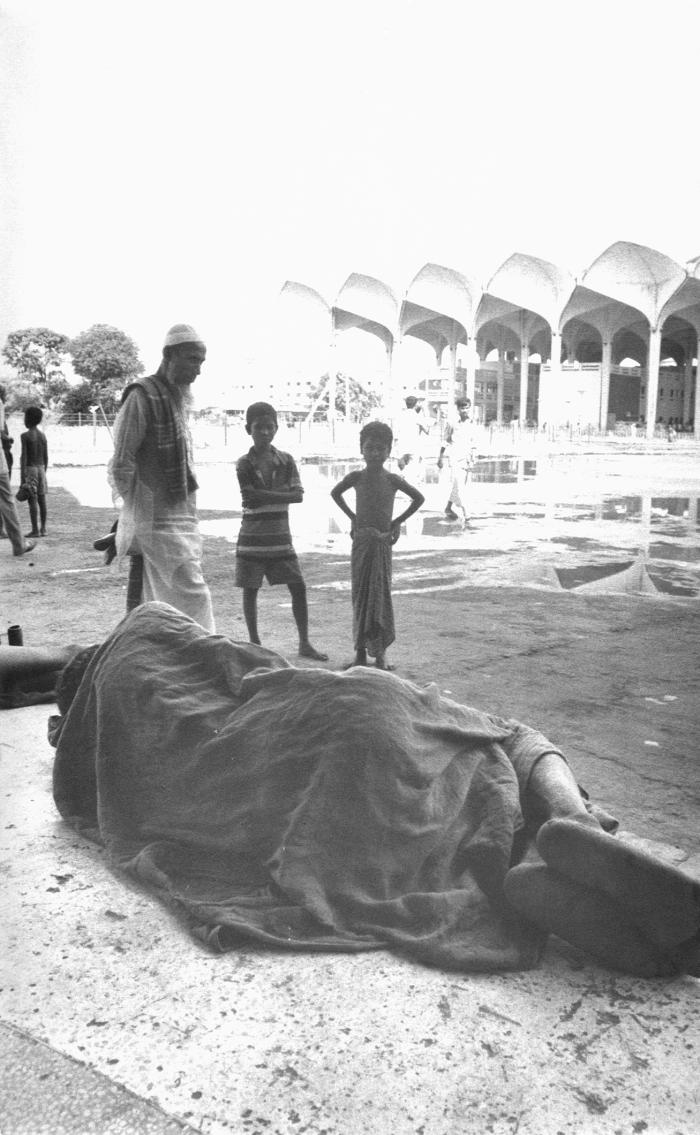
The man pictured here was lying alongside a Bangladeshi town road, and may have been dead. Otherwise, he would not have attracted the onlookers standing in the background. This photograph provided by Dr. Stan Foster, and captured by Pierre Claquin, M.D., B.A.C., who at the time was a member of the World Health Organization's Smallpox Eradication Program. It was part of a series photographed by former E.I.S. officer, Stanley O. Foster M.D., M.P.H., and was one of a series entitled 'The Story of One Smallpox Jeep', which depicted the travails faced by the jeep, and its occupants of public health practitioners, as they road through the Bangladesh countryside in an attempt to eradicate smallpox from the country.